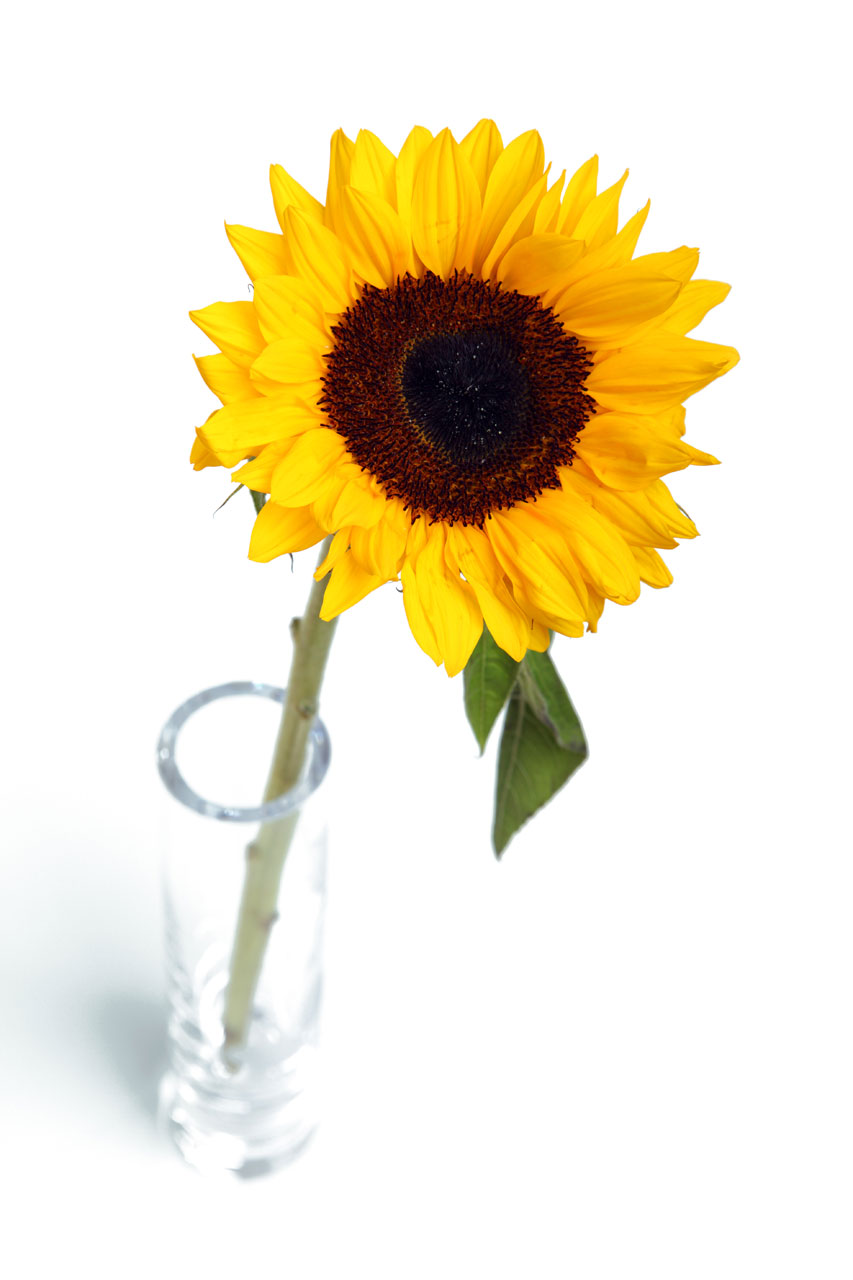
Sunflower in vase

Single sunflower in vase isolated on white background.